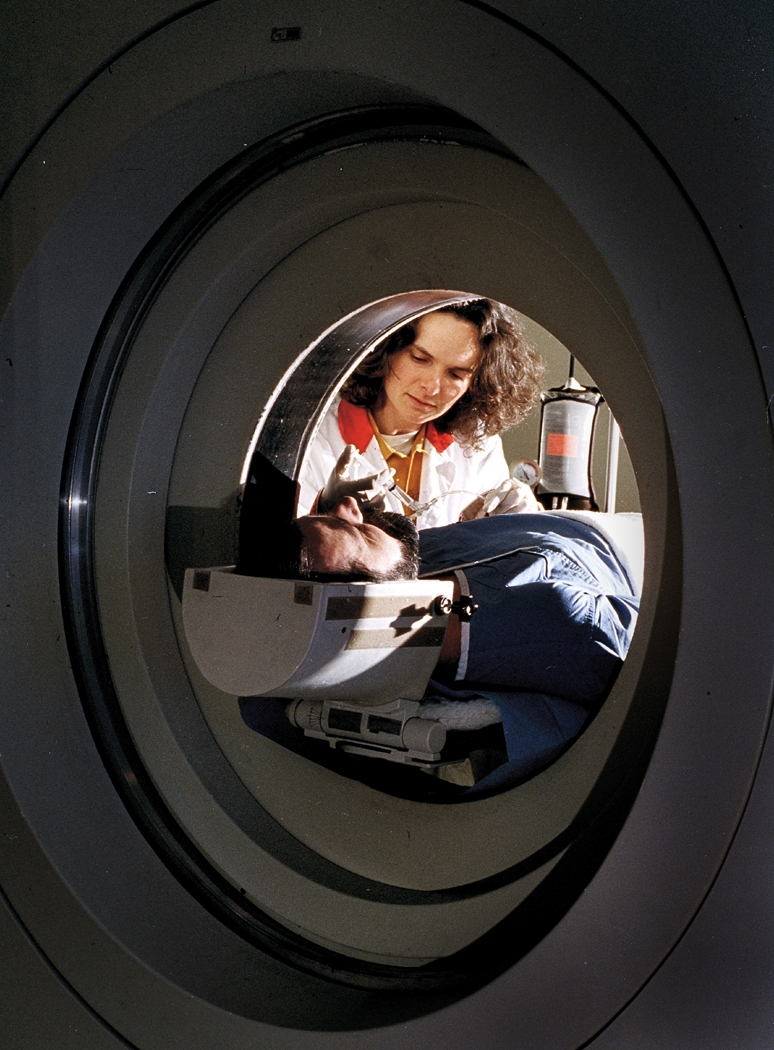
Nora Volkow - PET Scan of Patient